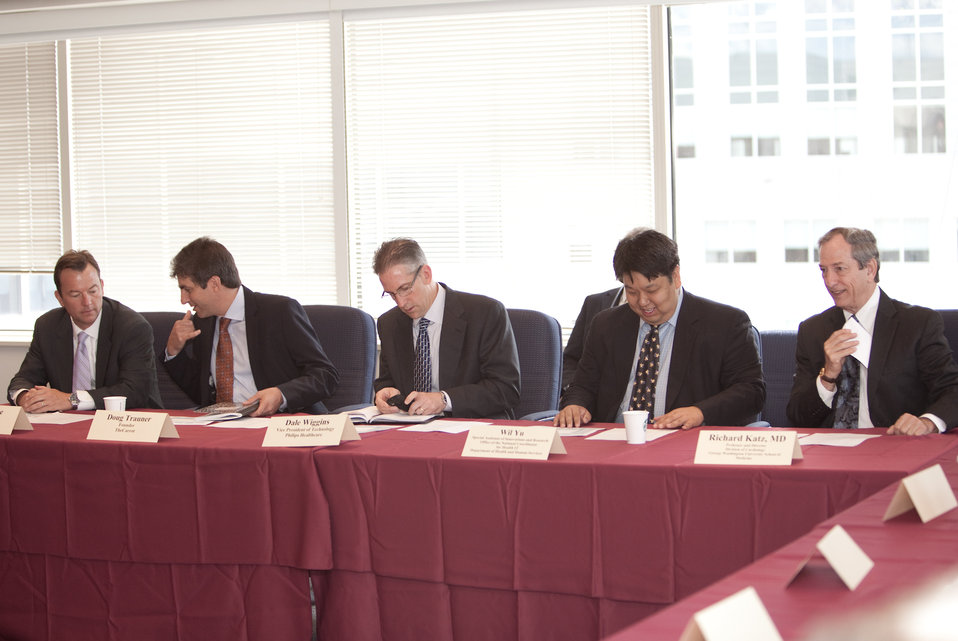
mHealth Attendees at FCC's Headquarters

Members from the health industry attendees Andy Sallee of MedApps, Doug Trauner (Founder) of TheCarrot, Dale Wiggins (Vice President of Technology) of Philips Healthcare, Wil Yu (Special Assistant of Innovations and Research) of ONC, Richard Katz (Professor and Director, Division of Cardiology) of George Washington University School of Medicine and Thomas Maguire (Senior Vice President) of Verizon waiting for FCC's Chairman to speak.

June 6, 2012 - FCC Headquaters | Washington, DC